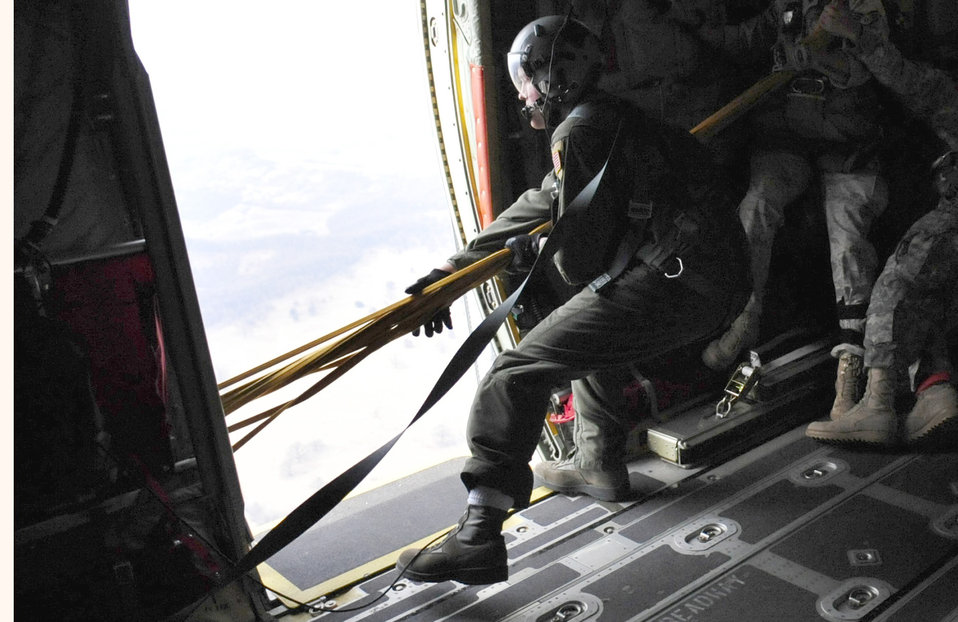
Carpathian Spring 2011

Staff Sgt. Jim Gettis pulls static lines into a C-130J Super Hercules after a successful static line jump of Romanian paratroopers that exited the aircraft March 14, 2011, over a landing zone near Campia Turzii, Romania. The jump was performed on the first day of Carpathian Spring 2011, an exercise where members of the U.S. military join their Romanian counterparts to learn from one another and strengthen alliances. Sergeant Gettis is a loadmaster assigned to the 37th Airlift Squadron.